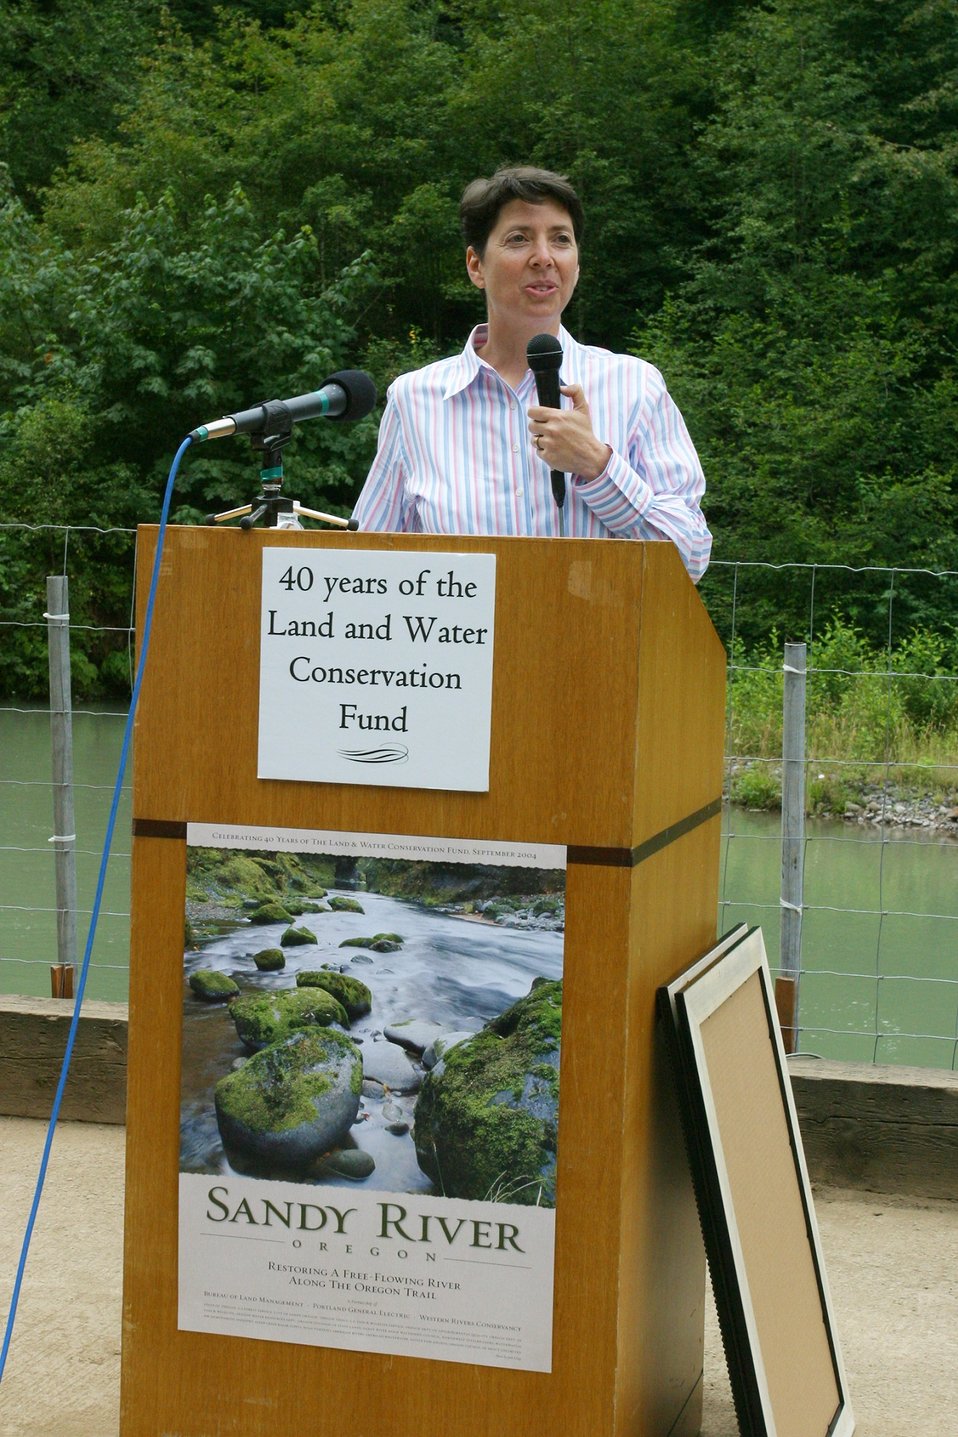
Sue Doroff, Vice President Western Rivers Conservancy, speaks during the Four C's Award at Little Sandy Dam.